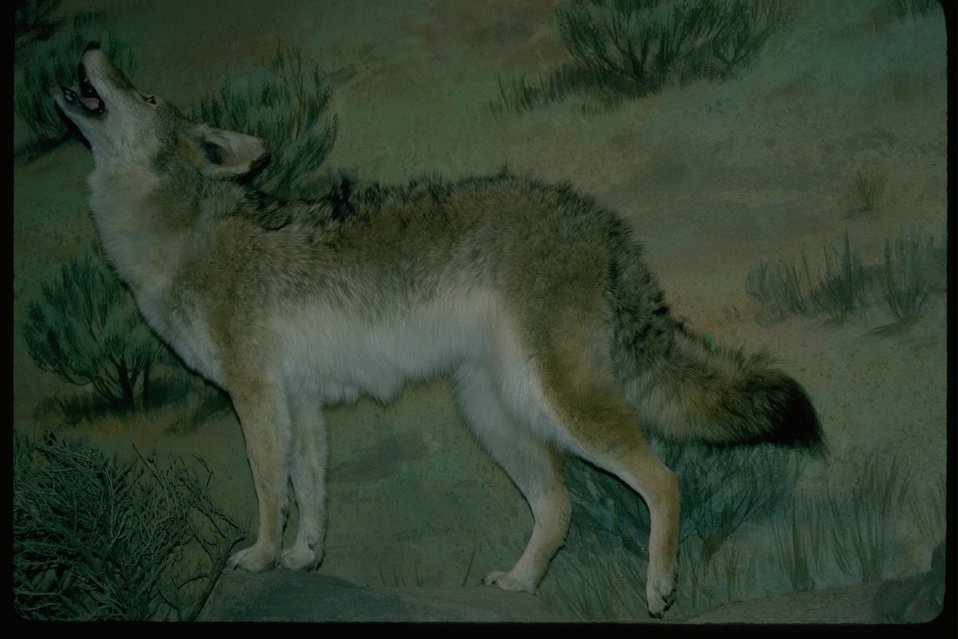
Living History exhibit at the NHOTIC.